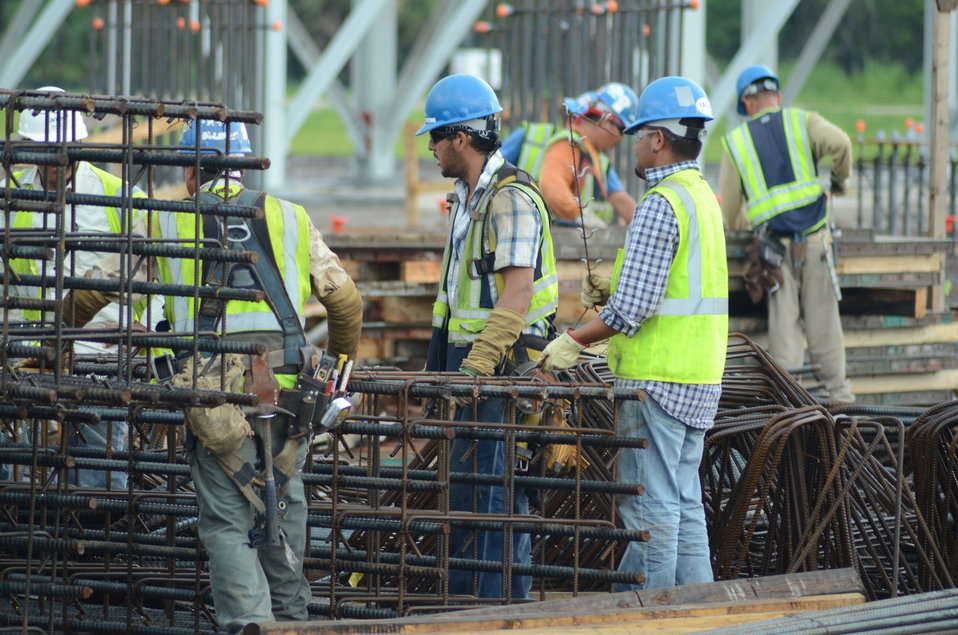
Construction personnel at work building the waste-to-energy INEOS bioprocessing facility in Florida, on Thursday, Aug. 11, 2011. The INEOS New Planed BioEnergy facility in Vero Beach, Florida, was granted a conditional Agriculture loan guarantee earlier this year to help build and operate a biorefinery capable of producing 8 million gallons per year of cellulosic ethanol and 6 megawatts of electricity.